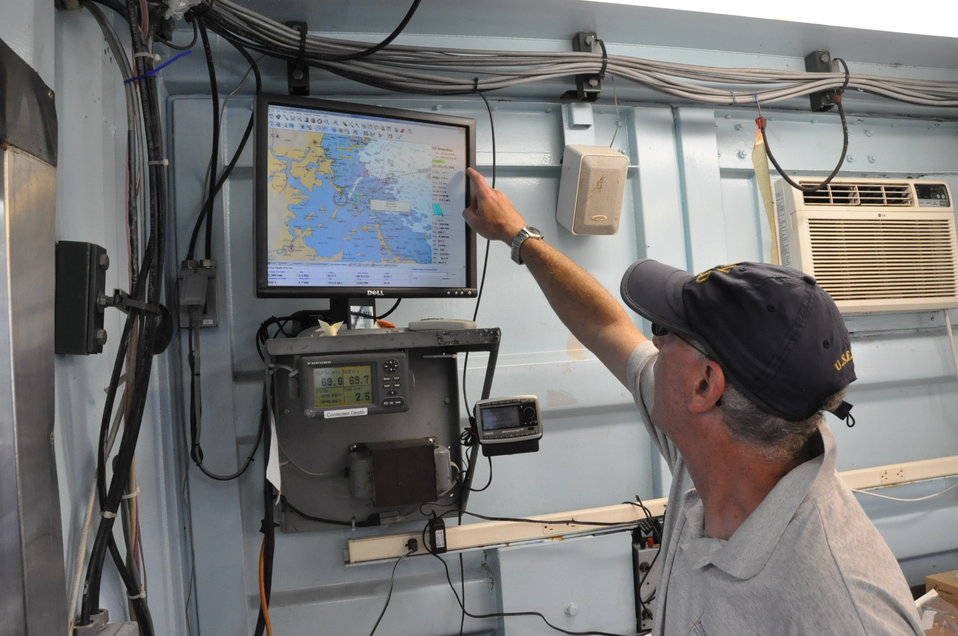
August 5, 2011 Tracking our route along the coast of Massachusetts